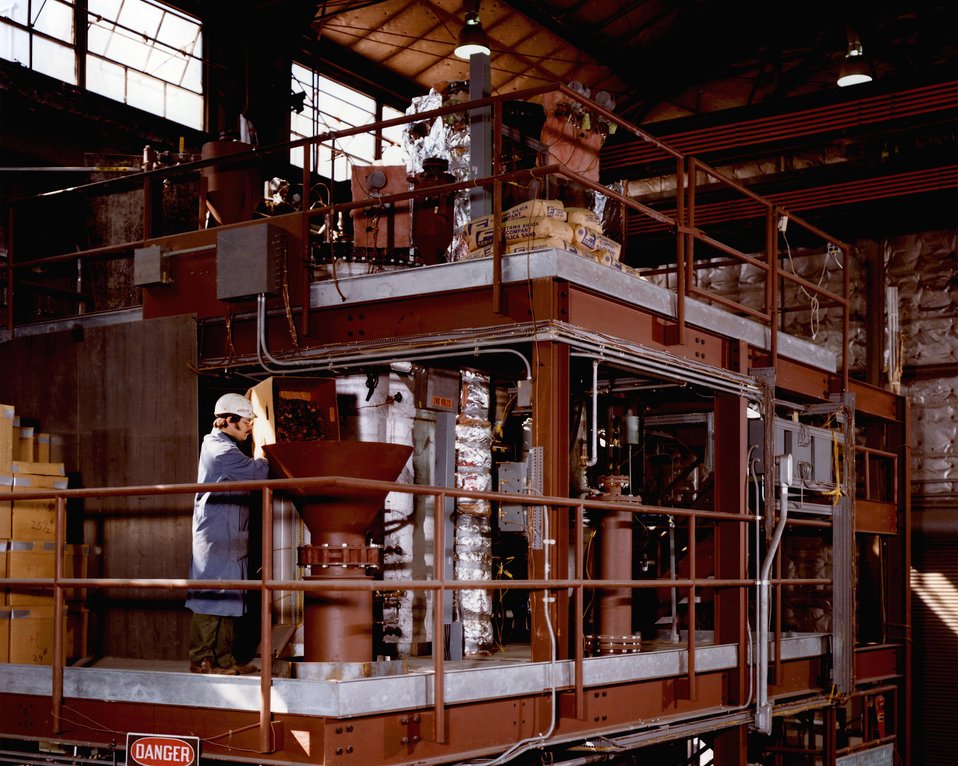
OVERVIEW OF THE FIRST AND SECOND LEVELS OF THE UNIT.

THE MULTI-SOLID FLUIDIZED-BED GASIFICATION TECHNOLOGY IS A METHOD OF CONVERTING BIOMASS, E.G., WOOD CHIPS, INTO METHANE-RICH GAS THAT COULD BE USED IN PLACE OF NATURAL GAS.THE METHOD USES A CHEMICAL CATALYST IN A REACTOR SYSTEM TO GASIFY BIOMASS. THIS REACTOR IS LESS COMPLEX IN DESIGN THAN A COAL GASIFICATION PROCESS AND ALLOWS THE USE OF SMALLER UNITS.